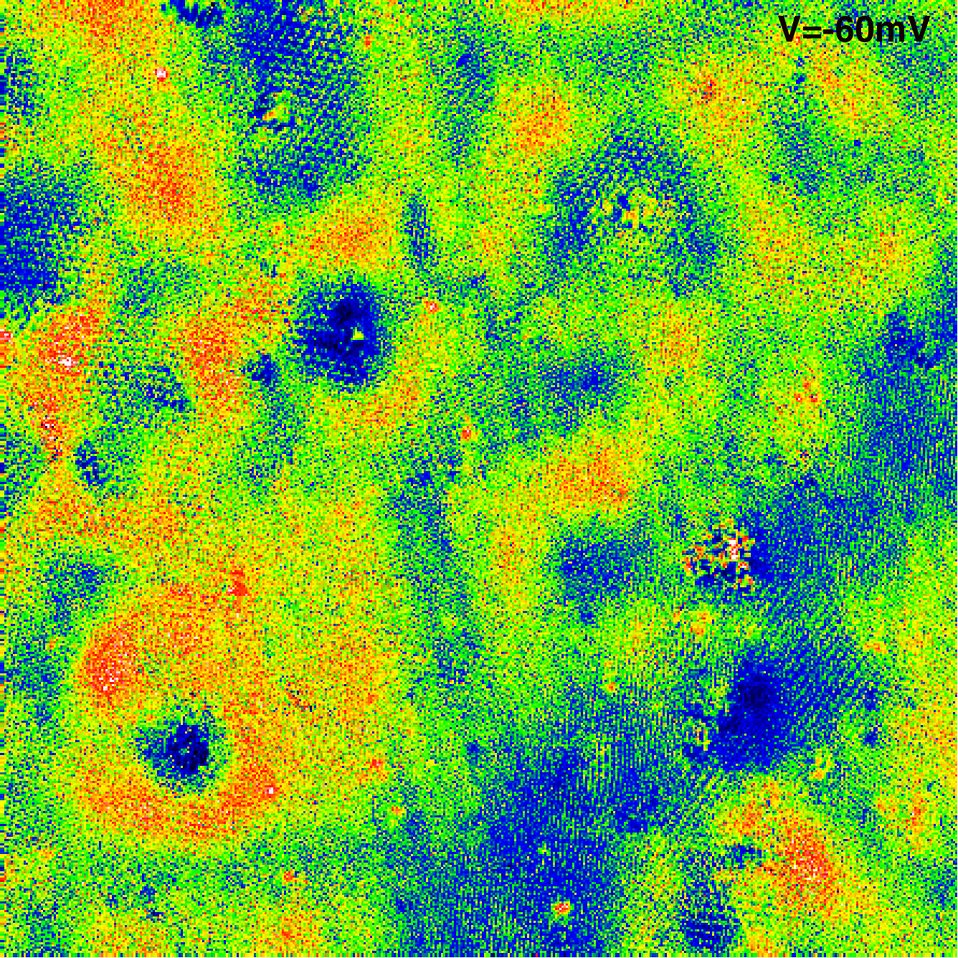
Speed Bumps Less Important Than Potholes for Graphene

Comparison of an STM topographic image of a section of graphene sheet (top left) with spectroscopy images of electron interference at three different energies shows strong interference patterns generated by atomic scale defects in the graphene crystal (red arrows) but only modest disturbances caused by larger scale bumps in the sheet (blue arrows.) Analysis of the ripples shows that the electron energy in graphene is inversely proportional to its wavelength, just like light waves. The area imaged is approximately 40 nanometers square.